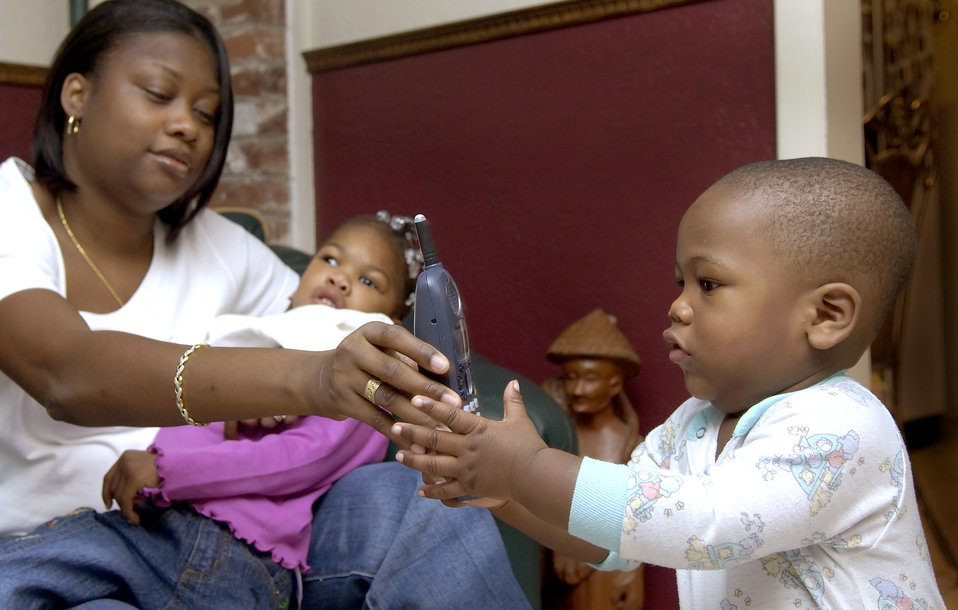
Hayes familiy

SAVANNAH, Ga., (AFPN) -- Diane Hayes hands the phone to her son Kion so he can talk to his father Staff Sgt. Herbert Hayes, stationed at Kunsan Air Base, South Korea. He calls every day to check on his family and talk to his wife and children. Sergeant Hayes received emergency leave after his family was forced to evacuate Keesler Air Force Base, Miss., a day before Hurricane Katrina hit the gulf coast. They, like 1,000 other Keesler families, lost their base home to the storm.